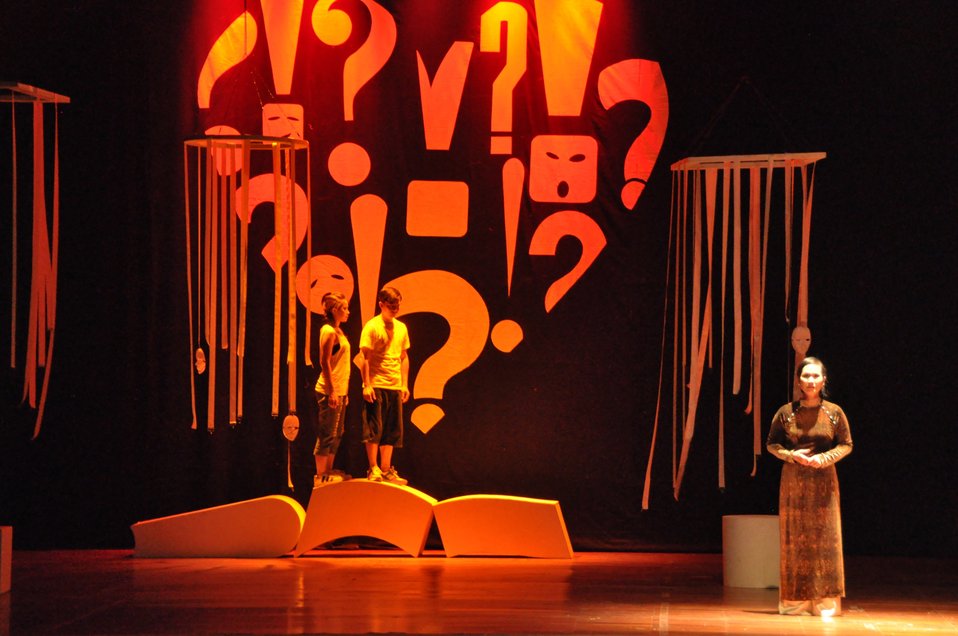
PEPFAR Musical Questions and Exclamations

Hanoi, May 17, 2013